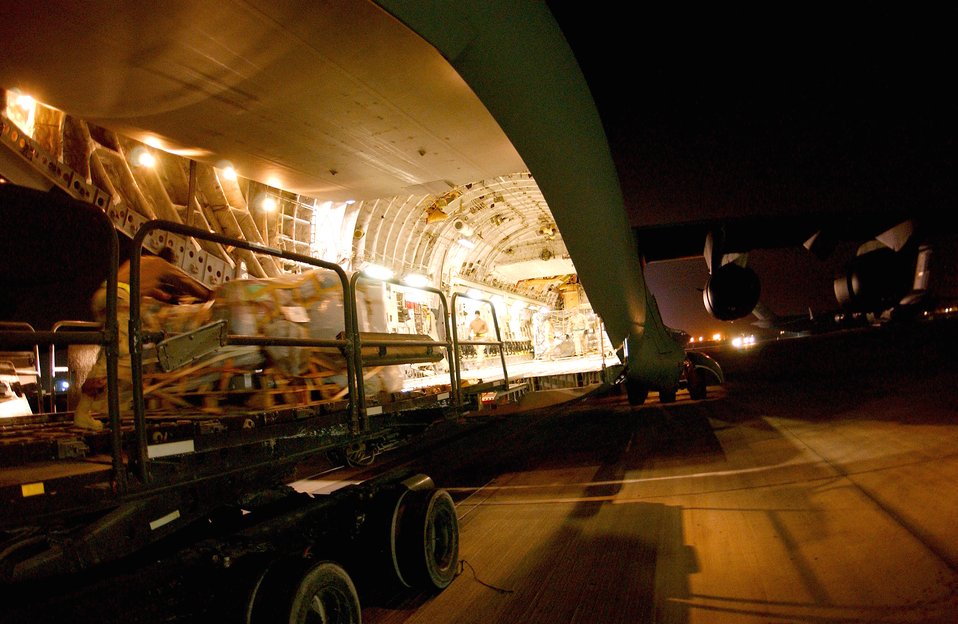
Dropping freedom

Airmen at an air base in Southwest Asia work in the early morning hours of Jan. 2 to load cargo onto a C-17 Globemaster III heading to Bagram Air Base, Afghanistan. Some of the cargo will be airdropped later that day to servicemembers at remote camps in Afghanistan.